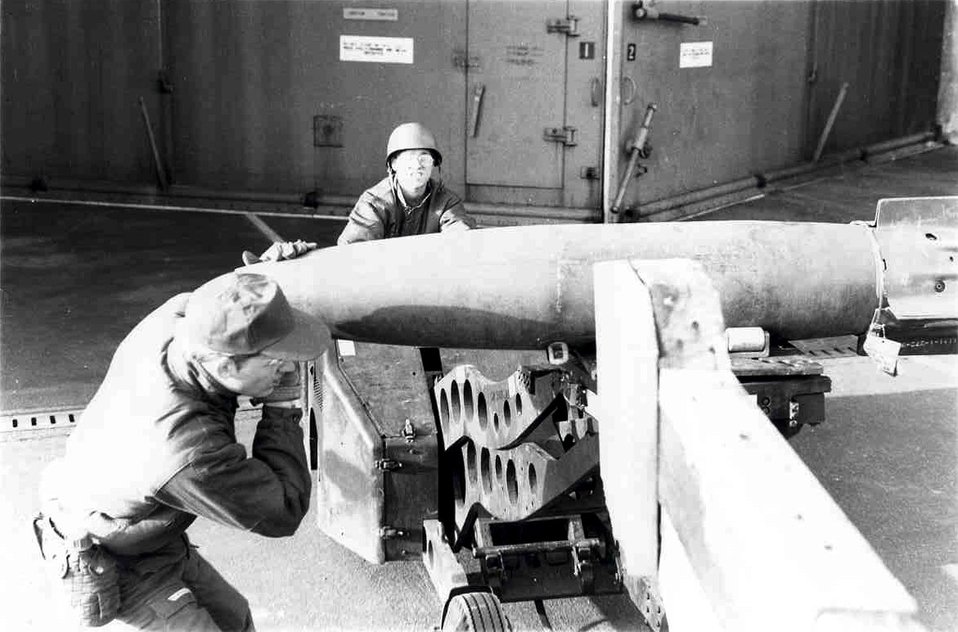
40th Tactical Group exercise in 1982

Two unidentified Airmen move an MK-82 general purpose bomb with a